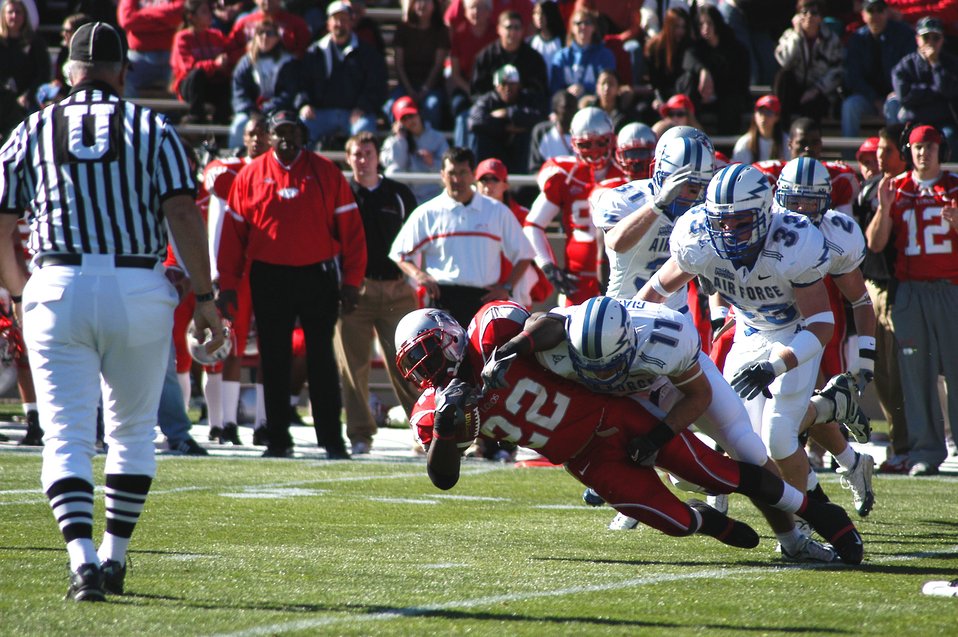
Falcons crush Lobos

ALBUQUERQUE, N.M. (AFPN) -- Falcon free safety Bobby Giannini brings down New Mexico running back DonTrell Moore.